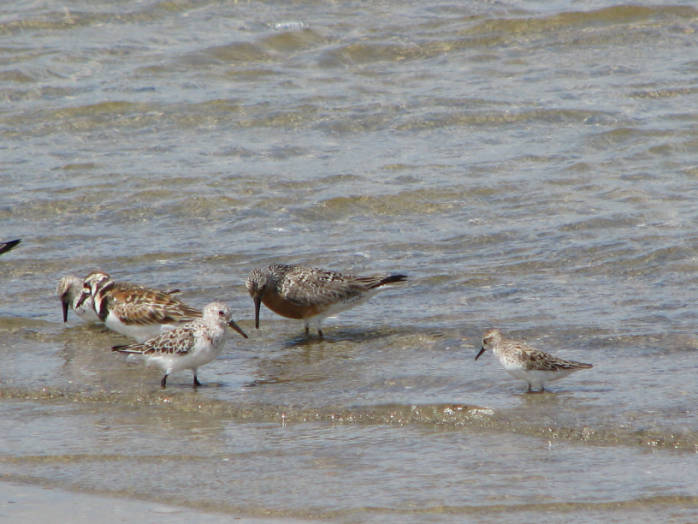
Shorebirds

Sandy Point, RI.